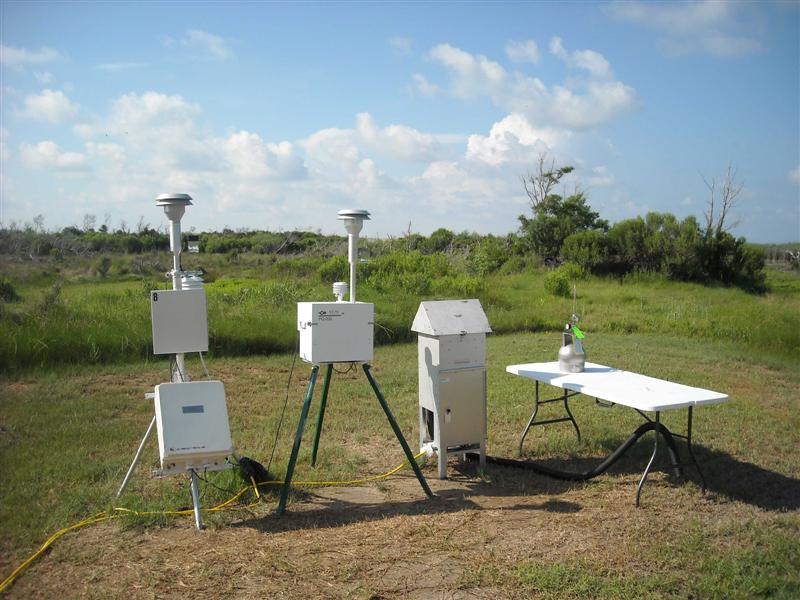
EPA air monitoring equipment

Air Monitoring equipment in Louisiana